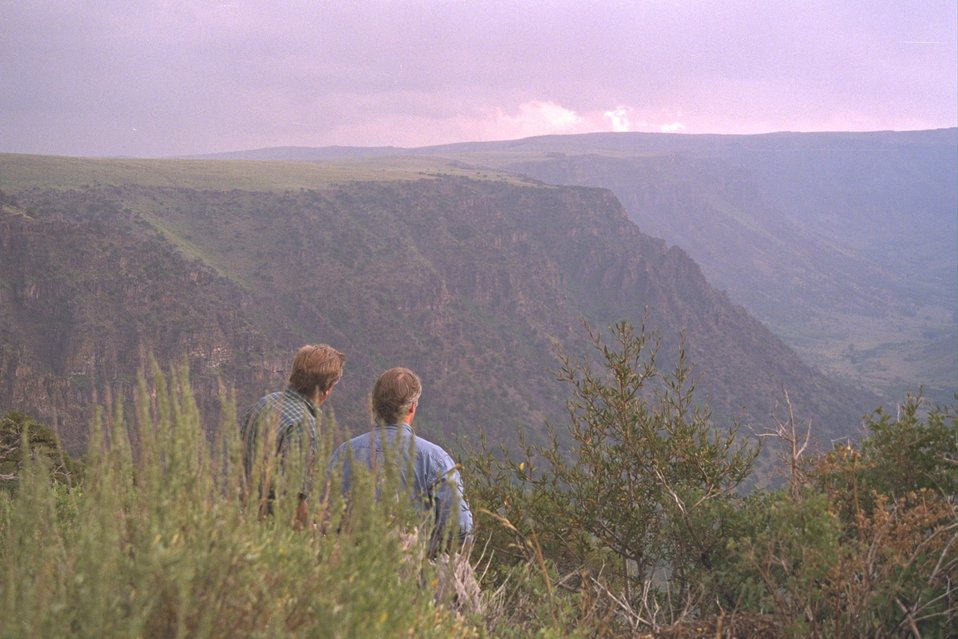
Secretary Babbitt consults with Governor Kitzhaber regarding the Steens Mountain Designation, while looking out over Big Indian Gorge.